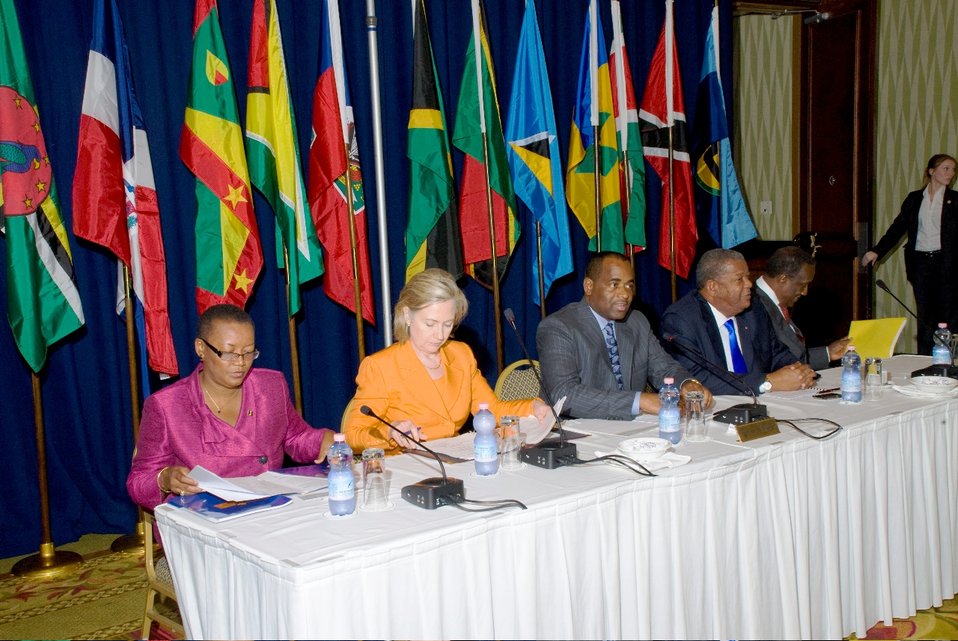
Secretary Clinton Participates in CARICOM Ministerial Meeting

U.S. Secretary of State Hillary Rodham Clinton participates in a CARICOM ministerial meeting in Bridgetown, Barbados, on June 10, 2010.